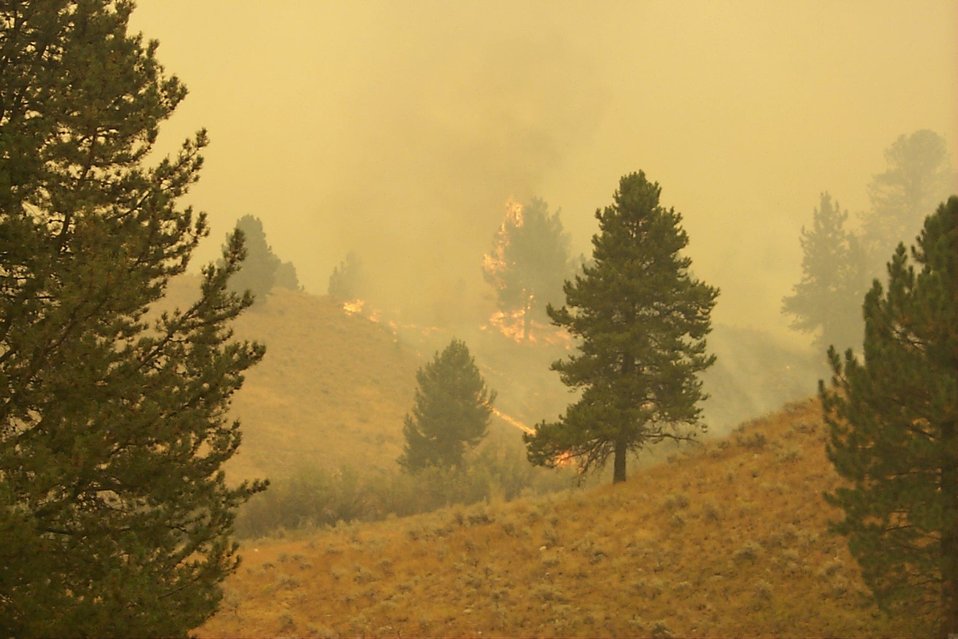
Fire Clearwater Fire Salmon Field Office USRD Upper Snake River District